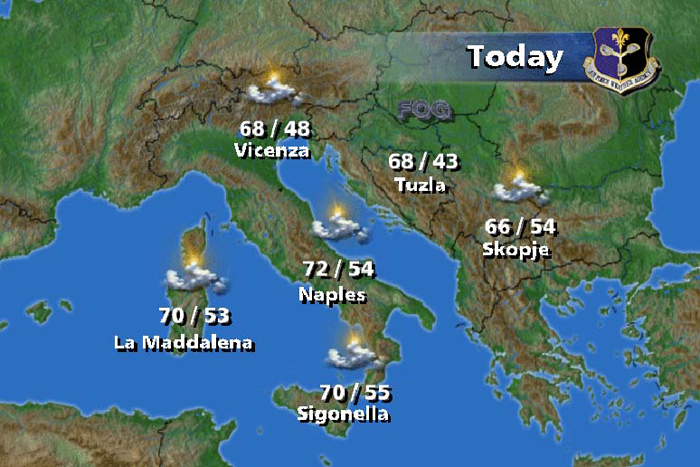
AFN Weather Center

Stars and Stripes, a daily newspaper distributed around the world primarily for U.S. servicemembers, is going to begin using weather information from the American Forces Network Weather Center. The center is part of the Air Force Weather Agency's 2nd Weather Squadron at Offutt Air Force Base, Neb.